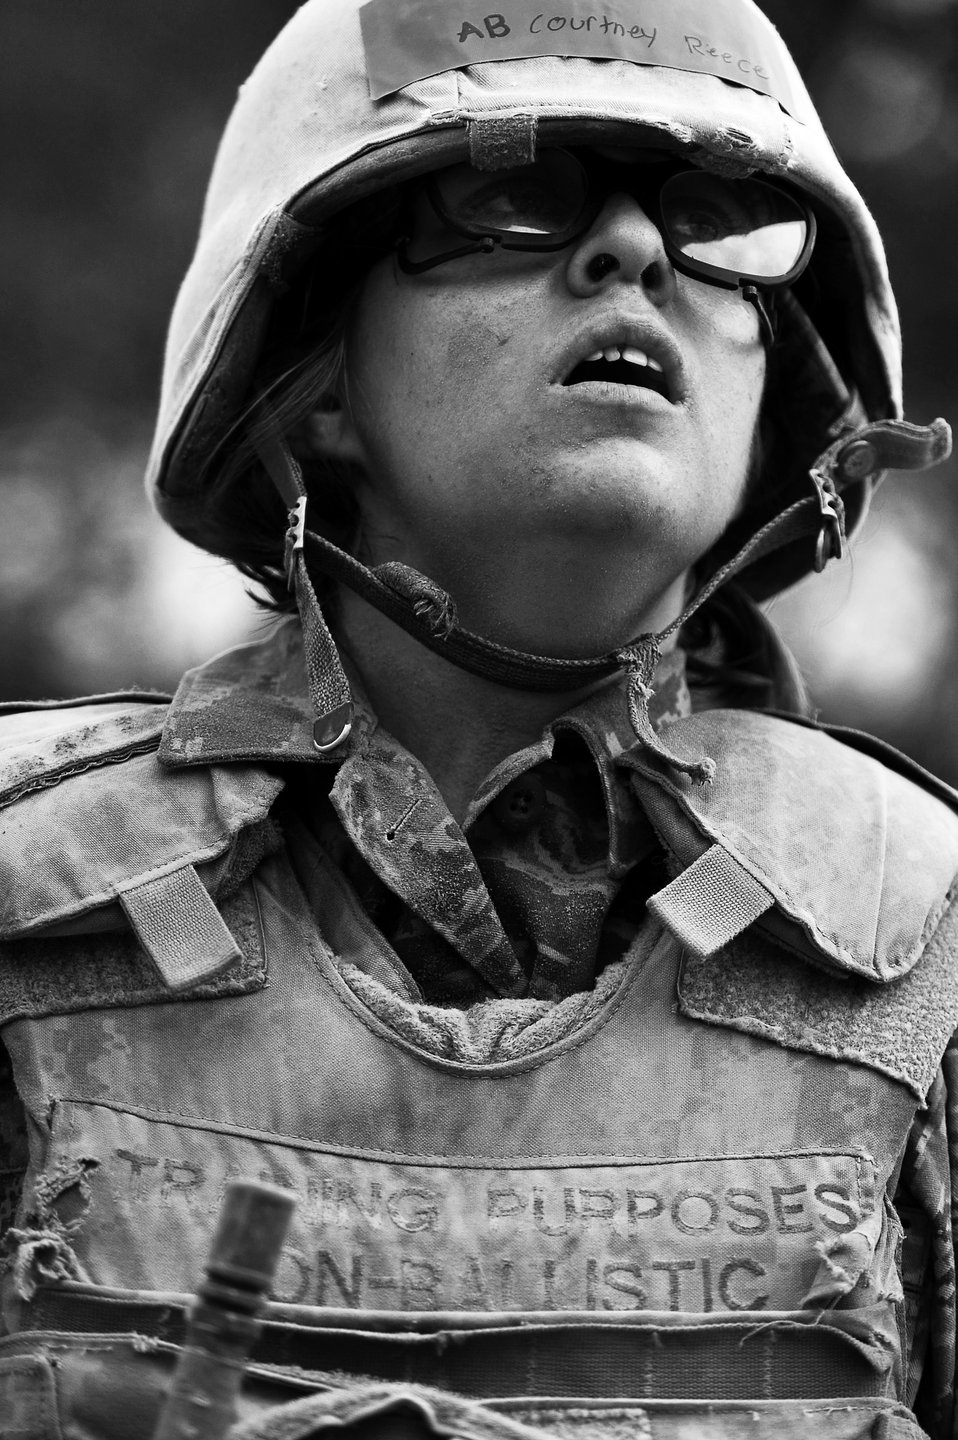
BEAST

Basic trainees go through their sixth week of Air Force basic military training at the Basic Expeditionary Airman Skills Training on May 25, 2011, at Lackland Air Force Base, Texas.